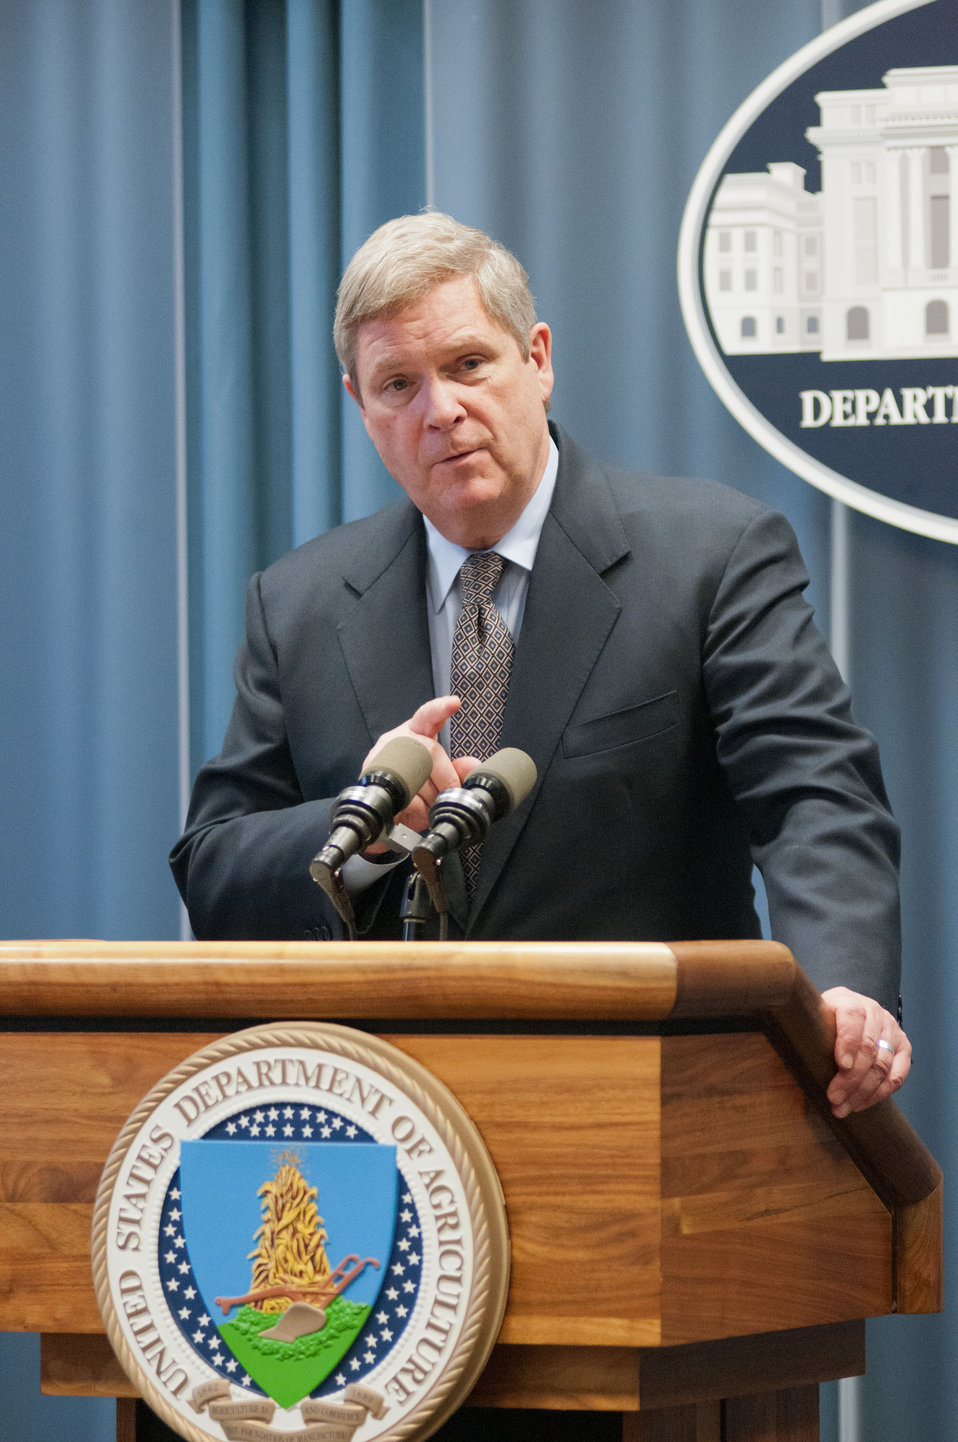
Agriculture Secretary Tom Vilsack talked about agriculture including the delivery, processing and other elements of the food chain the effect jobs in America, during a briefing, and question and answer period for stakeholders about the Agriculture FY2013 budget in Washington, D.C. on Monday, February 13, 2012.